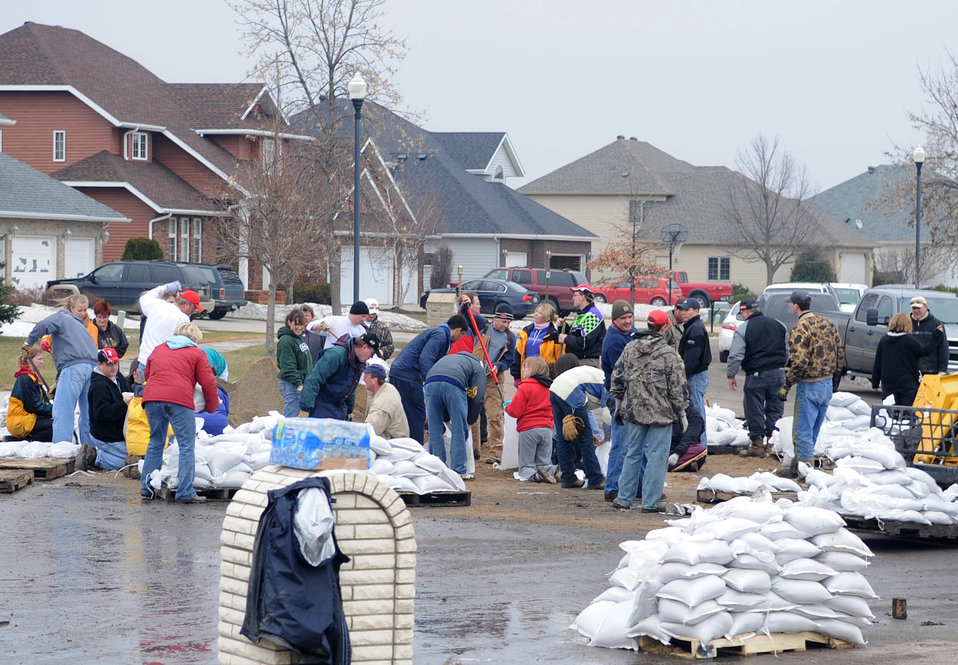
Airmen dedicate time, energy to flood preparations

Volunteers and neighbors gather around to fill and move sandbags in a Fargo, N.D., neighborhood in danger of flooding. More than 100 Airmen have volunteered to assist in flood protection efforts to date.